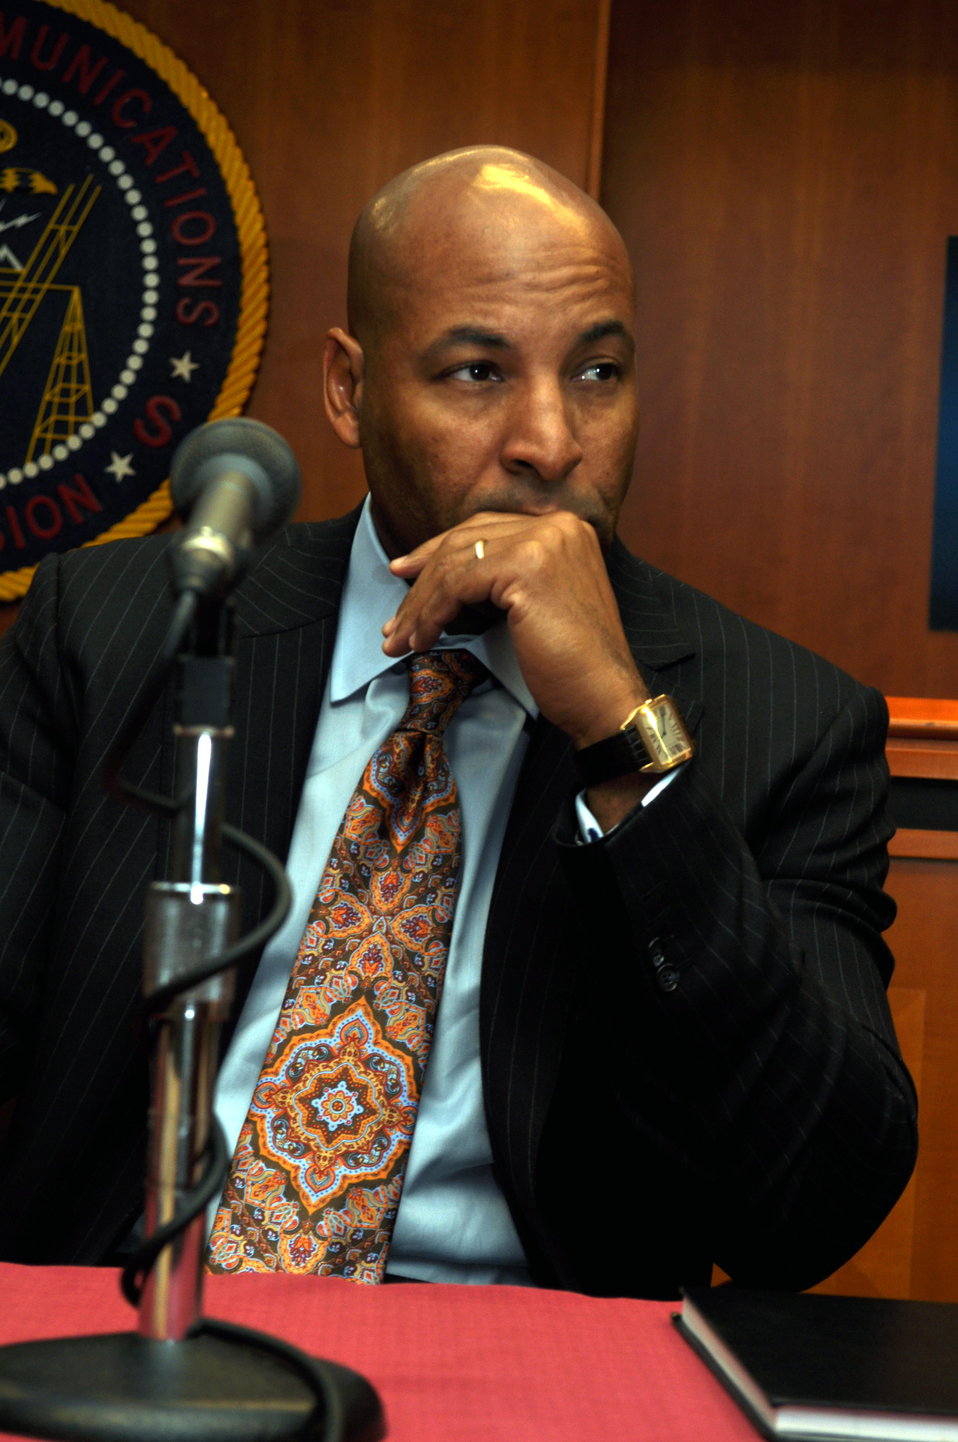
Capitalization Strategies

Workshop for small, minority and women owned businesses. Hosted by the Office of Communications Business